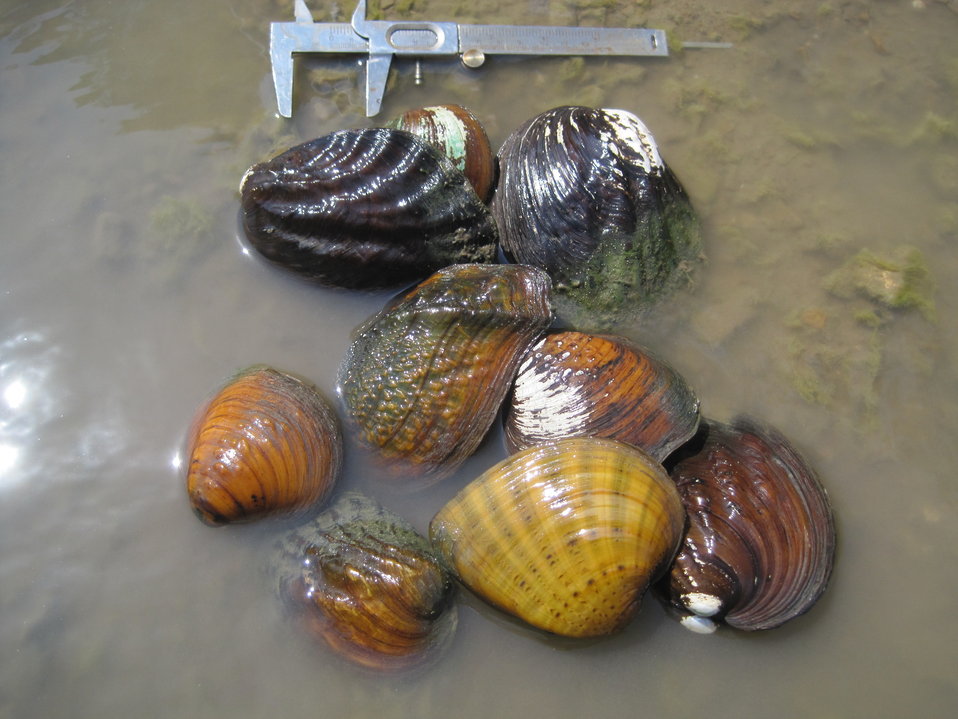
Mussel Species Survey Marais des Cygnes National Wildlife Refuge 2011